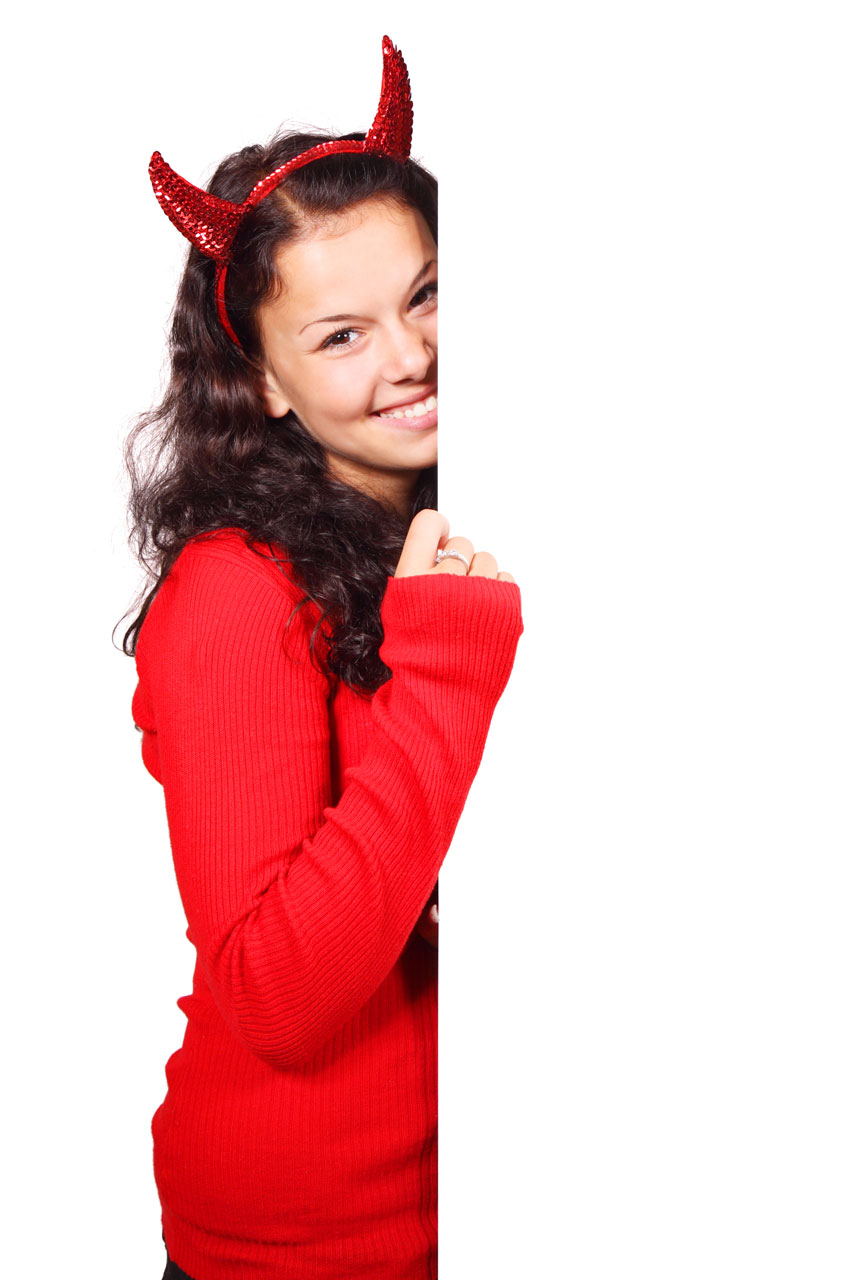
Smiling devil hiding behind white board.